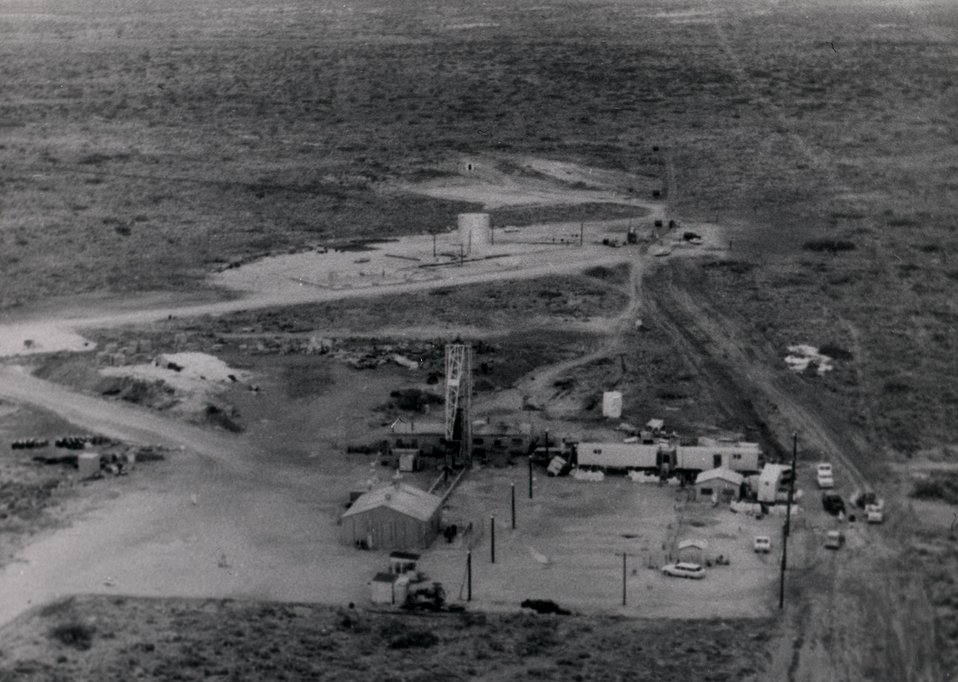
Project Gnome...December 11, 1961, Carlsbad, New Mexico...Overall view of shaft and Ground Zero after the detonation on December 10,1961. Circa 1962.